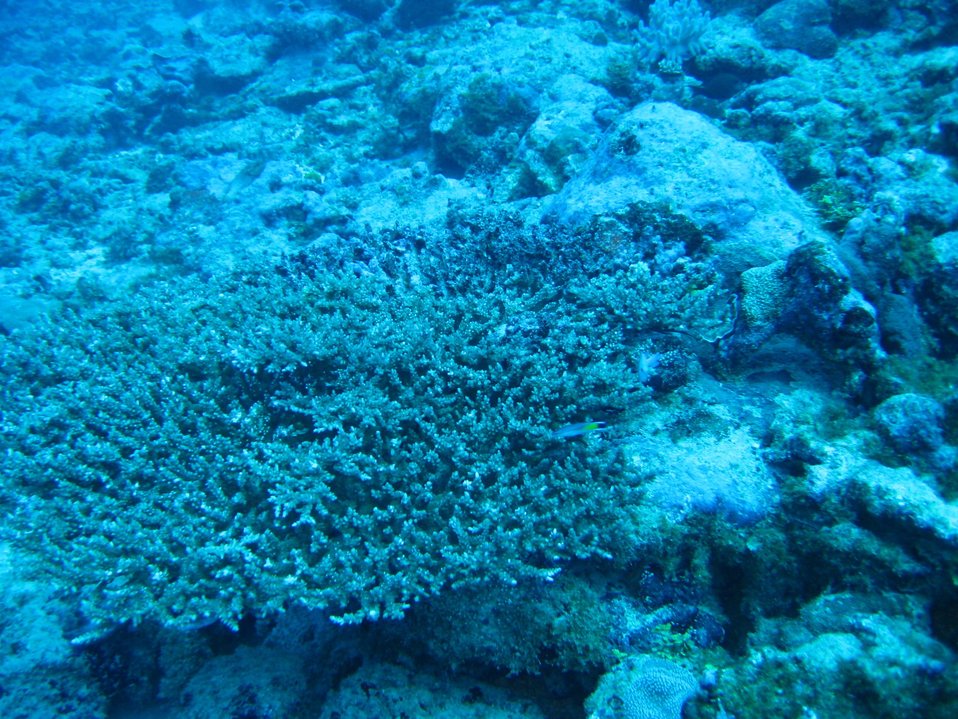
Reef scene with coral (Acropora pulchra)